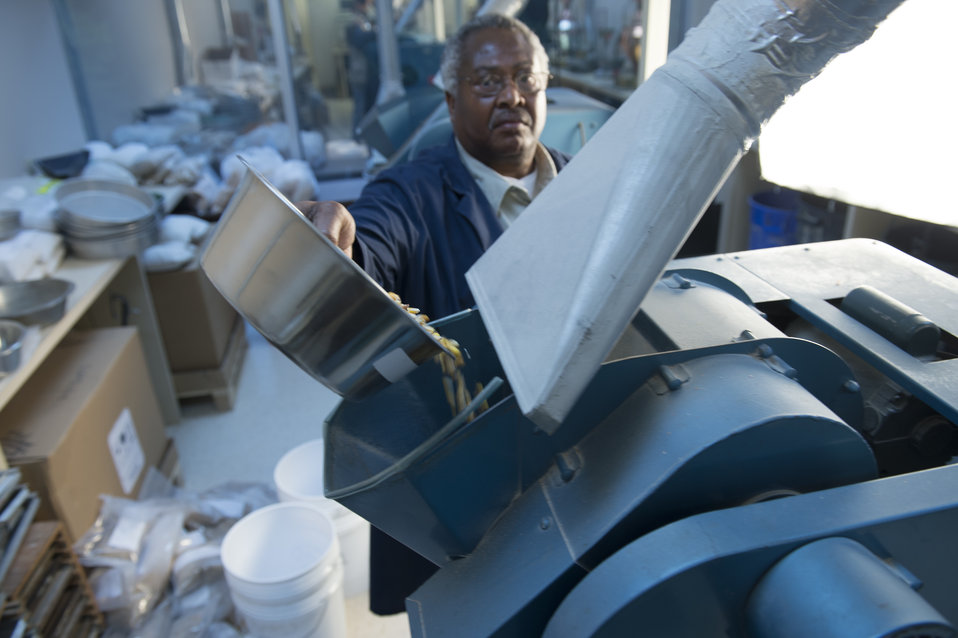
A U.S. Department of Agriculture (USDA) Grain Inspection, Packers and Stockyards Administration (GIPSA) Federal Grain Inspection Service (FGIS) scientist tests corn at the FGIS inspection laboratory in New Orleans, LA on Monday, Nov. 18, 2013.